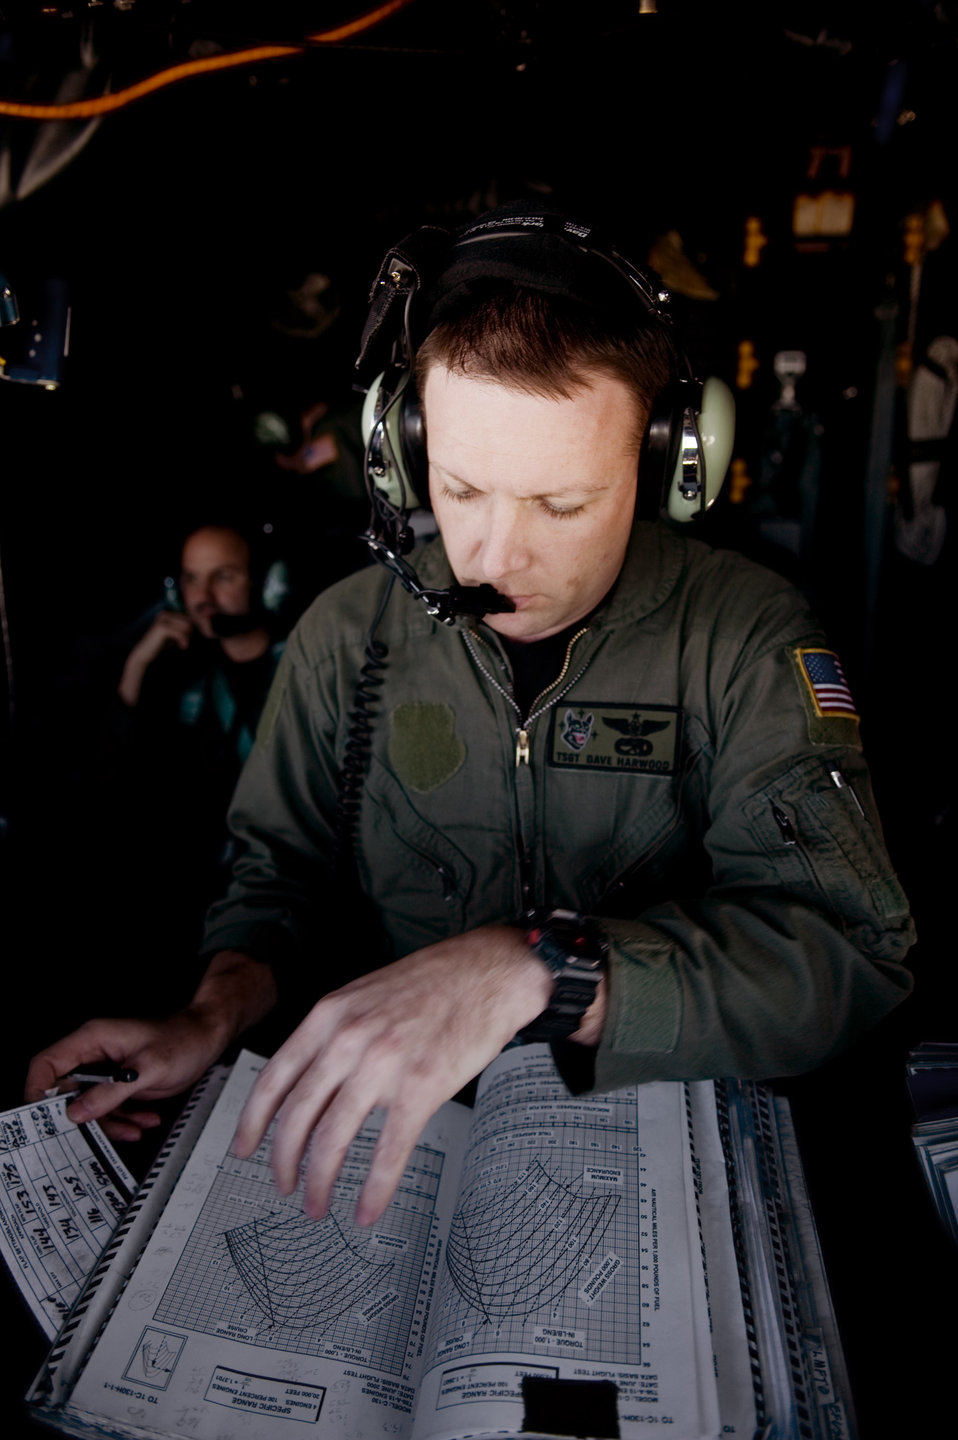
FARP ready at Yamagata Airport

Tech. Sgt. Dave Harwood calculates take-off and landing distance March 17, 2011, at Yamagata Airport, Japan, to establish a forward area refueling point there. FARPs allow aircraft to operate at further distances by allowing the aircraft to refuel where no fuel typically exists. The fuel at Yamagata Airport will be used for American search-and-recovery teams during Japan's earthquake and tsunami relief. Sergeant Harwood is a flight engineer with the 17th Special Operations Squadron at Kadena Air Base, Japan.